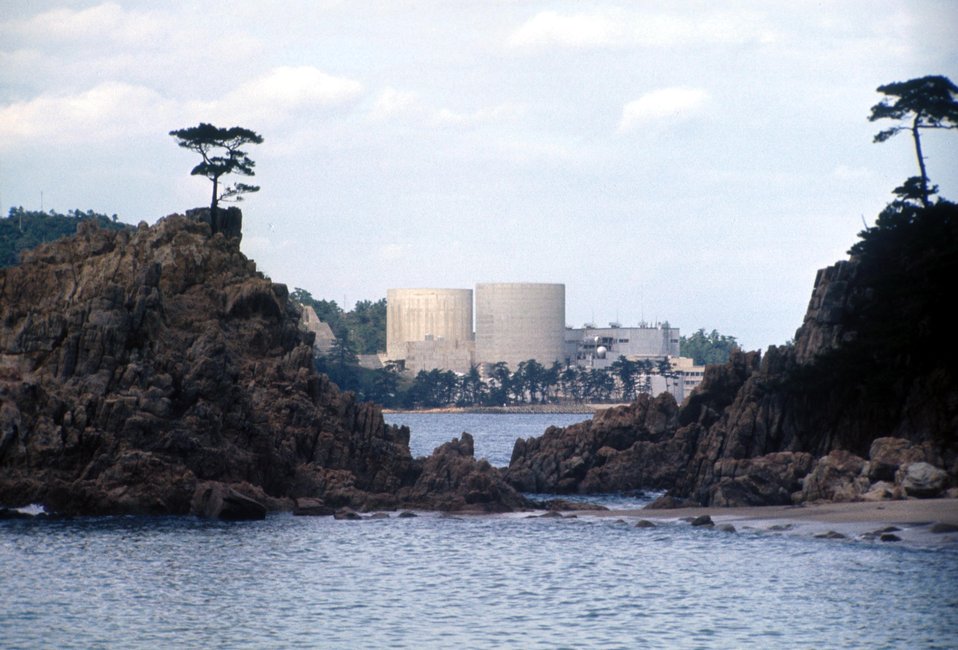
Kansai Plant #1, Mihama, Japan. Kansai Nuclear Reactor.